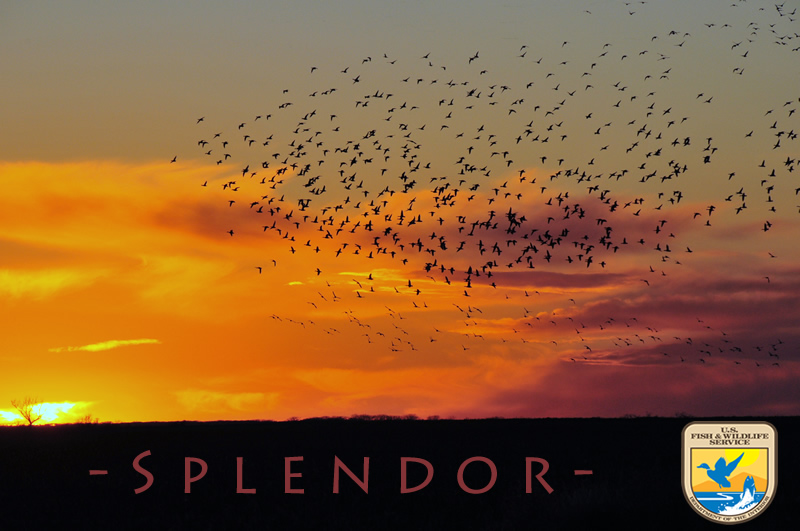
Splendor